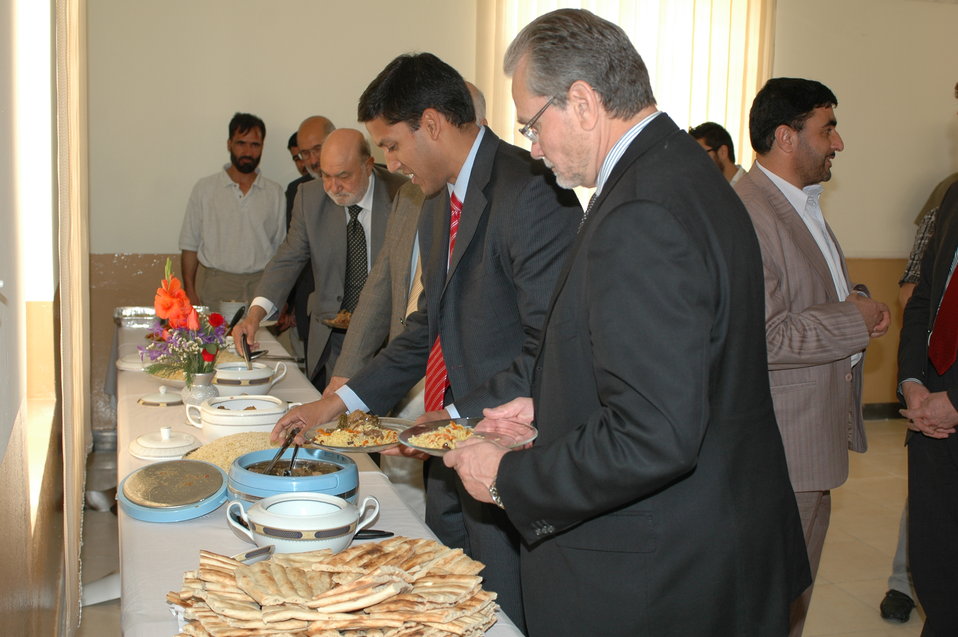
Dr Shah Visits Votech in Kabul